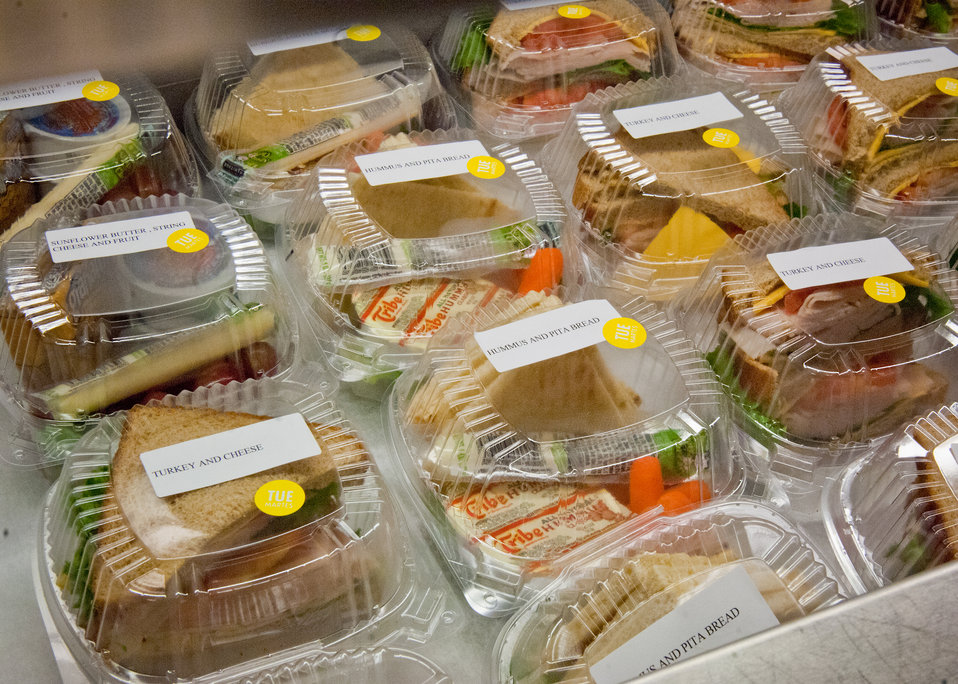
Hummus and Pita Bread, Sunflower butter string cheese and fruit, Turkey and cheese sandwiches prepared for the National School Lunch Program at Washington-Lee High School in Arlington, Virginia, on Wednesday, October 25, 2011. The National School Lunch Program is a federally assisted meal program administered by the United States Department of Agriculture, Food and Nutrition Service operating in public, nonprofit private schools and residential child care institutions. It provides nutritionally balanced, low-cost or free lunches to children each school day.